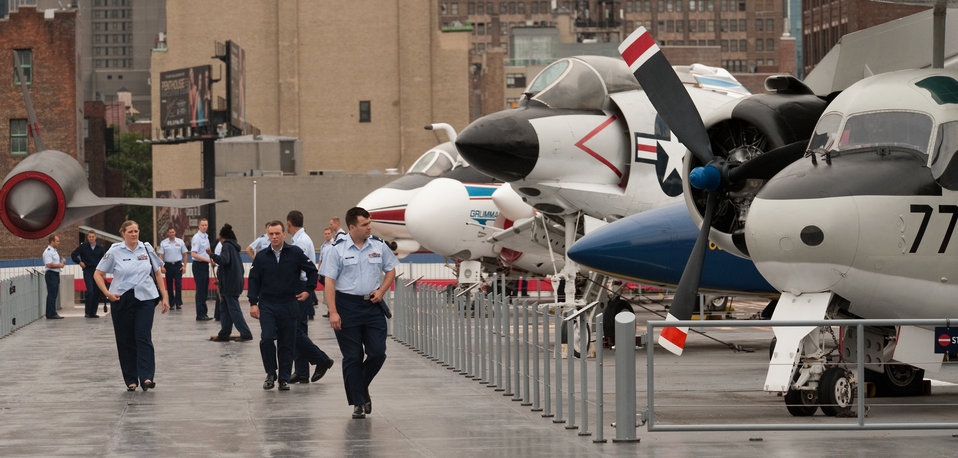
Air Force Week New York City Proclamation Ceremony

Airmen enjoy the opportunity to roam the decks of the USS Intrepid while visiting New York City during the Air Force Week New York City proclamation ceremony on Aug. 24, 2010. The event at the Intrepid Sea, Air & Space Museum was highlighted by a six-ship flyover by the USAF Thunderbirds. The Honorable Michael Donley, Secretary of the Air Force attended, along with General Raymond Johns, Commander of Air Mobility Command. The Police Commissioner of the City of New York, the Honorable Raymond Kelly, represented NYC. Mr. Greg Kelly of